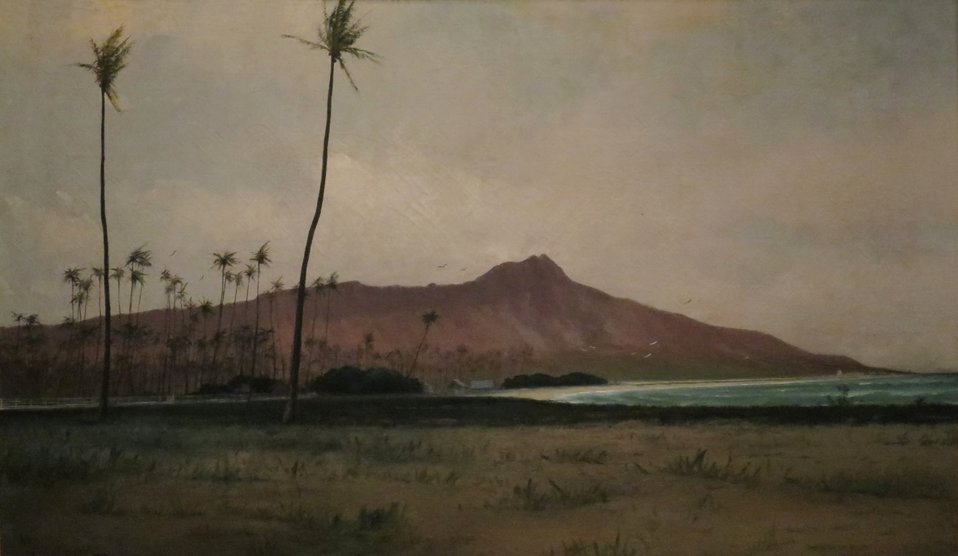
'Diamond Head from Waikiki', oil on canvas painting by Gideon Jacques Denny, 1882, Bishop Museum